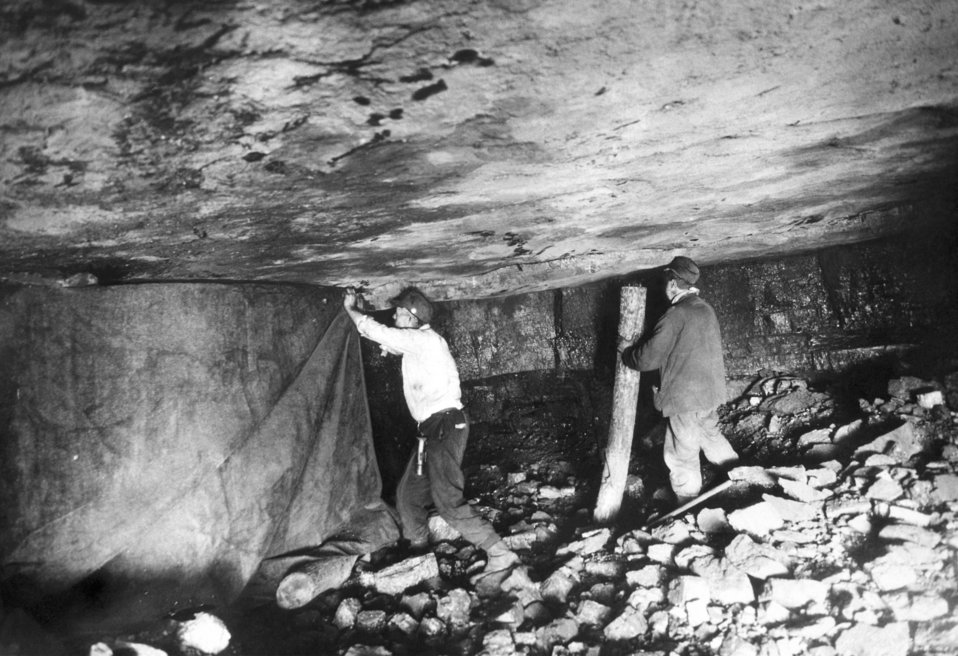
This historical image, which was provided by the Center for Disease Control's (CDC), National Institute for Occupational Safety and Health (NIOSH), depicted two coal miners in the process of constructing a brattice of wet burlap in order to secure the ventilation of this section of subterranean mine shaft. Neither of the two men was wearing a filtered breathing mask, goggles, or earplugs, which today, would have been required protective gear. Mining coal, especially under circumstances such as these close quarters, facilitated coal dust inhalation, thereby, predisposing miners to the long-term negative health effects of this profession such as 'black lung disease', or 'coal-workers' pneumoconiosis' (CWP). Today, the Federal government's stringent regulations on the level of coal dust permissible in the air of a coal mine, and the requisite use of filtered breathing devices, has dramatically lowered the number of cases of black lung disease.